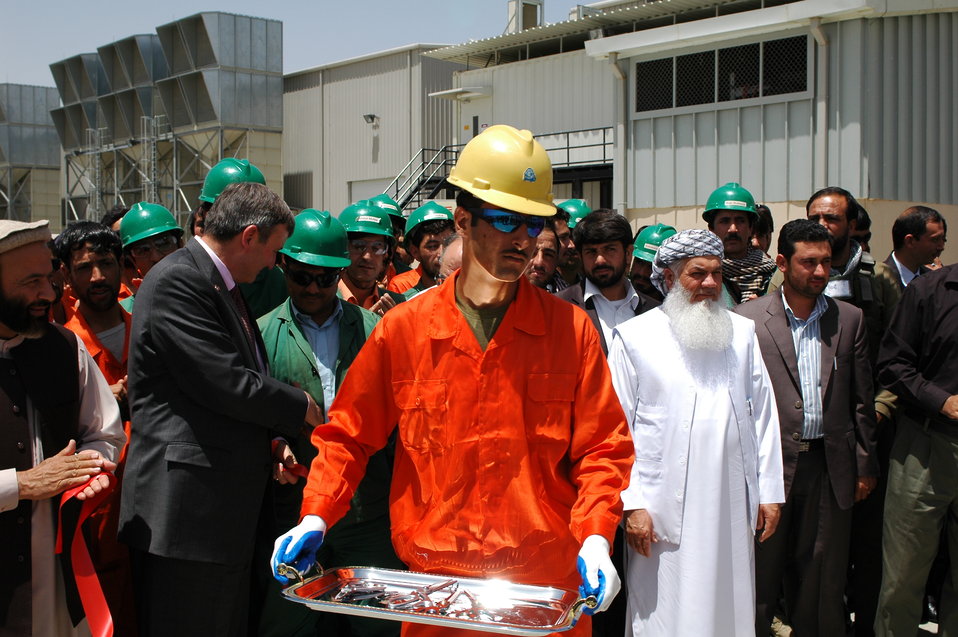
105 MW Tarakhil Power Plant Handover